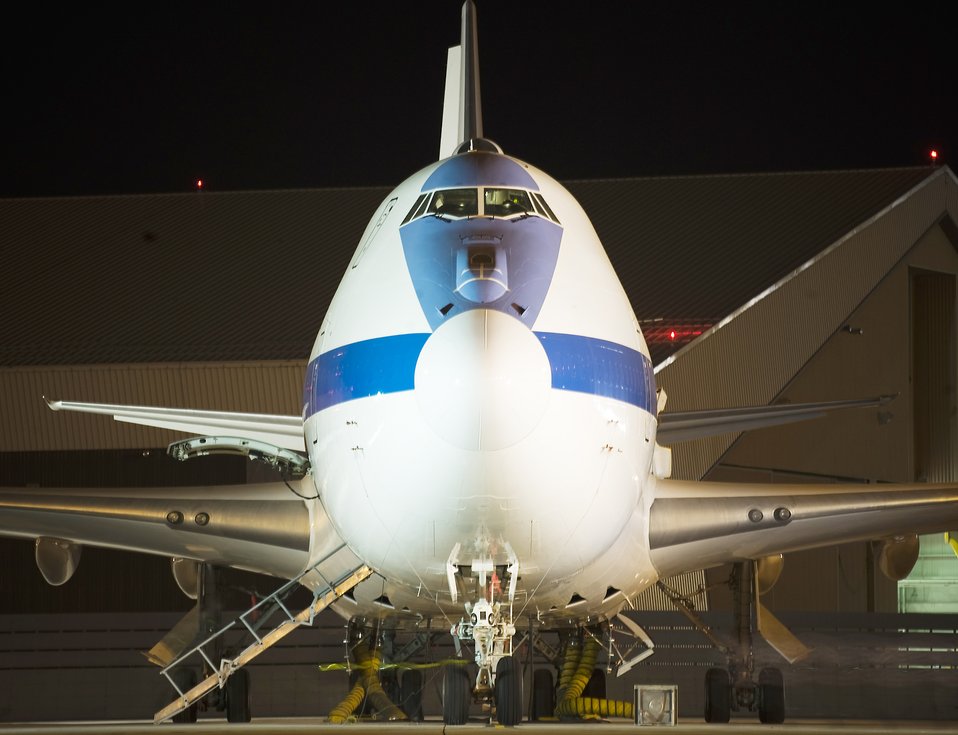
Flying command center

The E-4B is the national airborne operations center based at Offutt Air Force Base, Neb., and supports the president, secretary of defense and chairman of the Joint Chiefs of Staff. The alert crew is composed of 21 joint-service battle staff personnel along with an Air Force aircrew, maintenance, security and communications personnel.